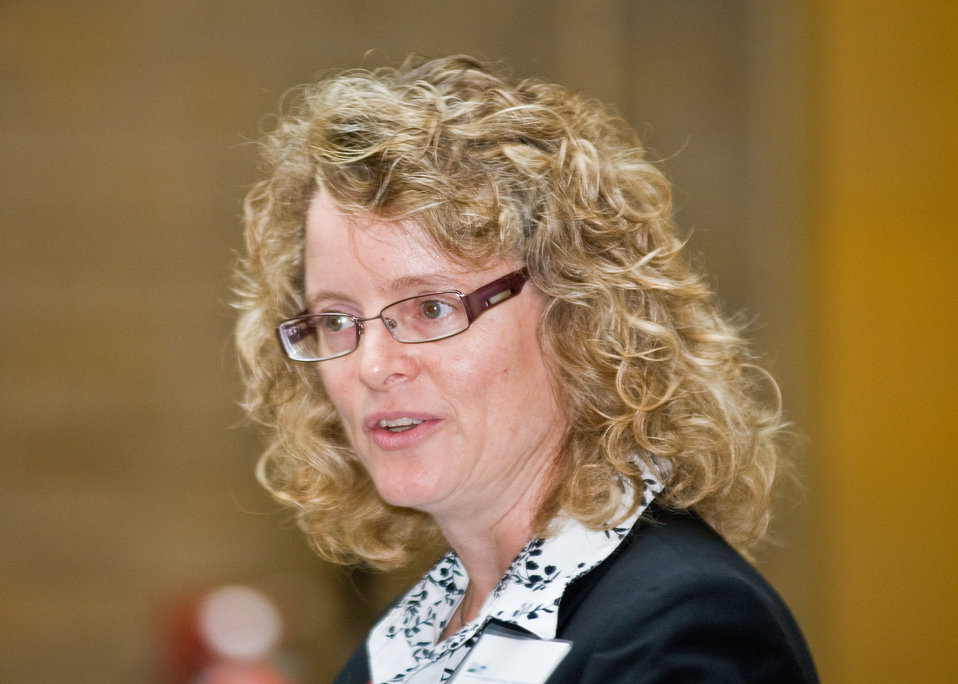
Madeline Schultz, Iowa Sate University, Cooperatives on eXtention explained the education and expansion of the cooperative business model of cooperative development for women farmers and ranchers during the celebration of October as National Co-op Month at an event at the Department of Agriculture, Tuesday, October 5, 2010 in Washington, DC. USDA Photo 10di1517-53 by Bob Nichols.